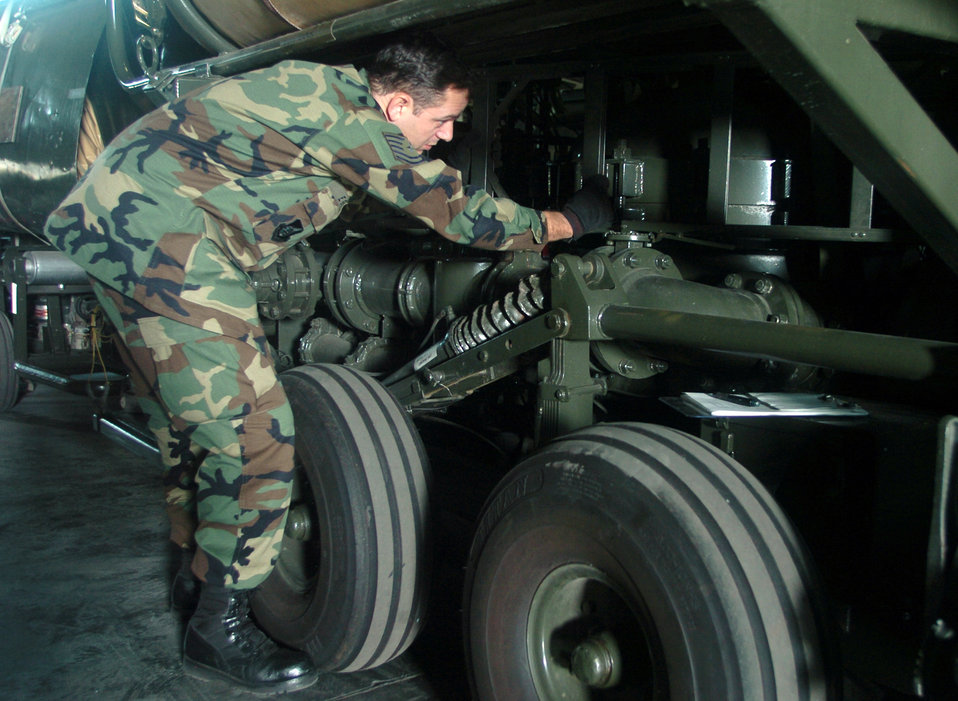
Yokota fuels specialists support global missions

YOKOTA AIR BASE, Japan -- Tech. Sgt Charles Egri checks an R-14 air transportable hydrant refueling system during inspection here. The R-14 can be airlifted or ground shipped anywhere in the world and made fully operational in a matter of hours. Each unit contains a pump; two 50,000-gallon bladder tanks; and all the hoses, valves, and fittings necessary for operation. Sergeant Egri is the 374th Logistics Readiness Squadron's fuels mobility support equipment element team chief.